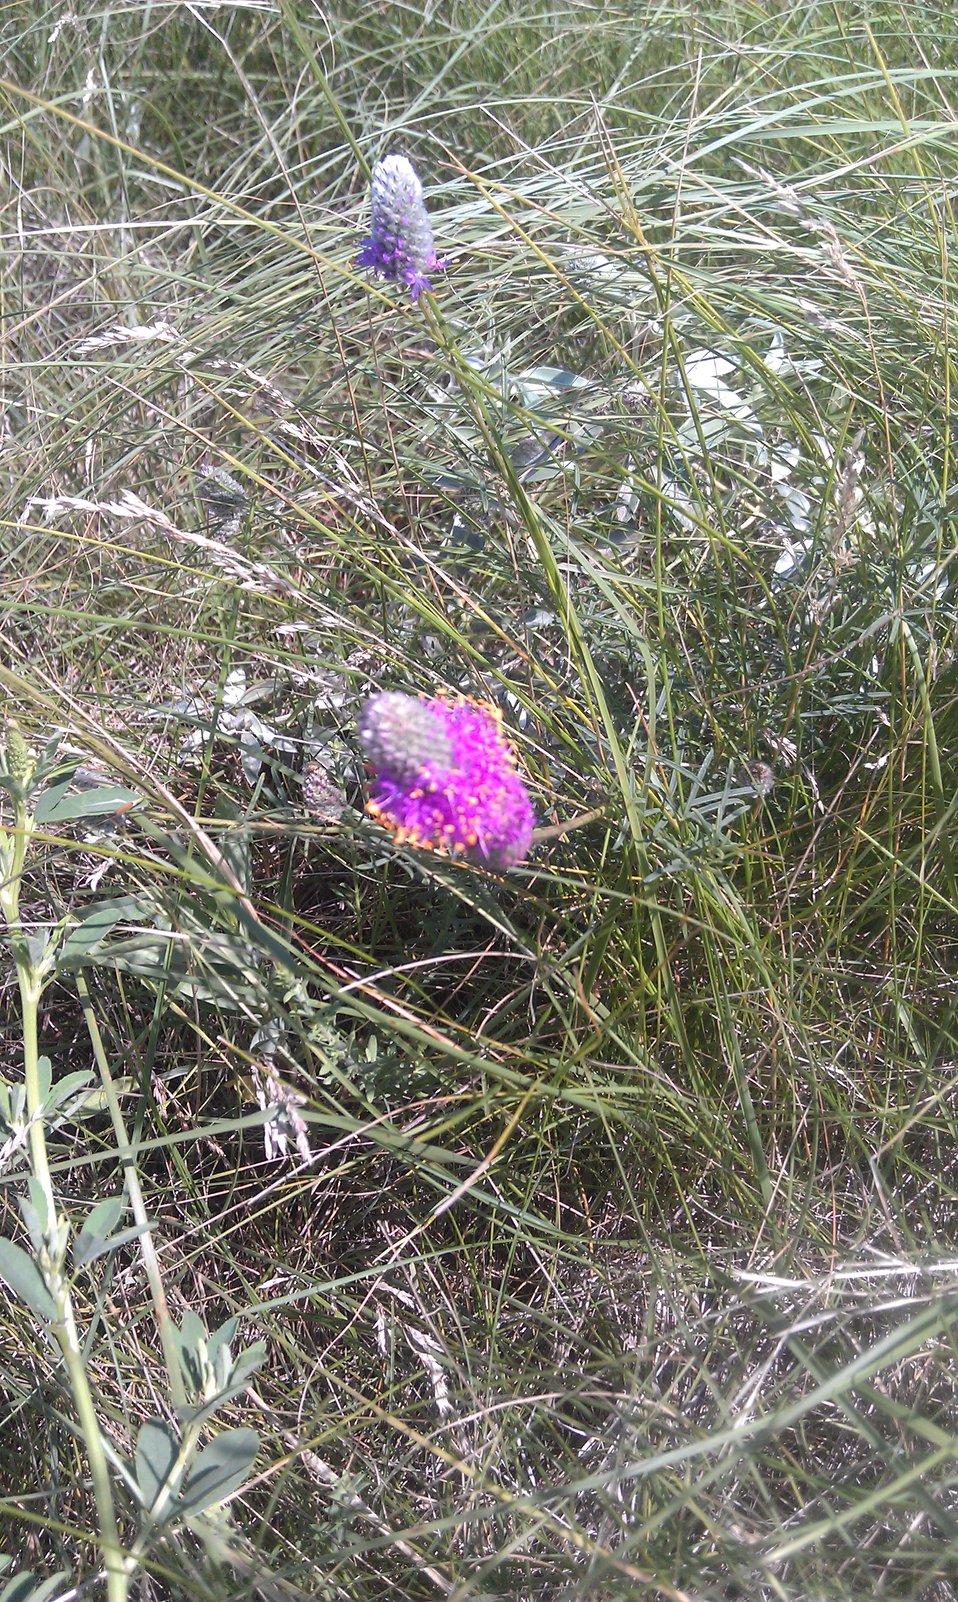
WPA Wildlife

Prairie Flowers